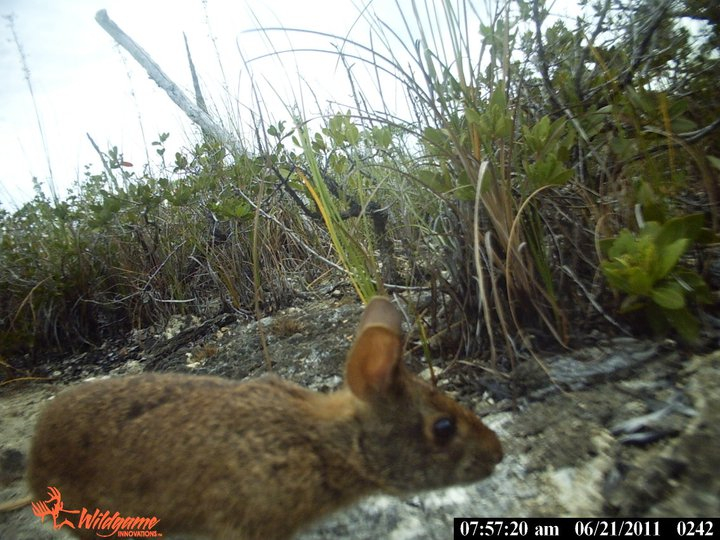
marsh rabbit

Florida Keys National Wildlife Refuge Complex, FL
Camera trap photo: USFWS